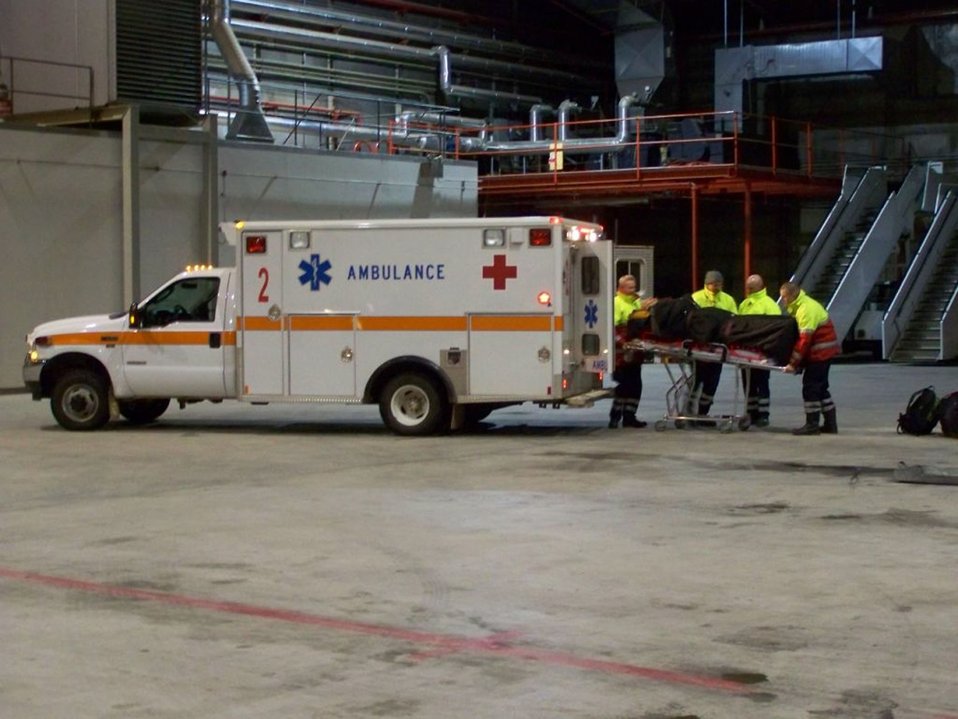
Thule members aid in lifesaving ice rescue

A National Science Foundation employee is loaded onto a ambulance March 7 at about 11:30 p.m. after he was medically evacuated from Station Summit research camp nearly 700 miles away from Thule Air Base, Greenland. The clinic at Thule AB treats anyone who can make it to the clinic, including patients from outlying villages